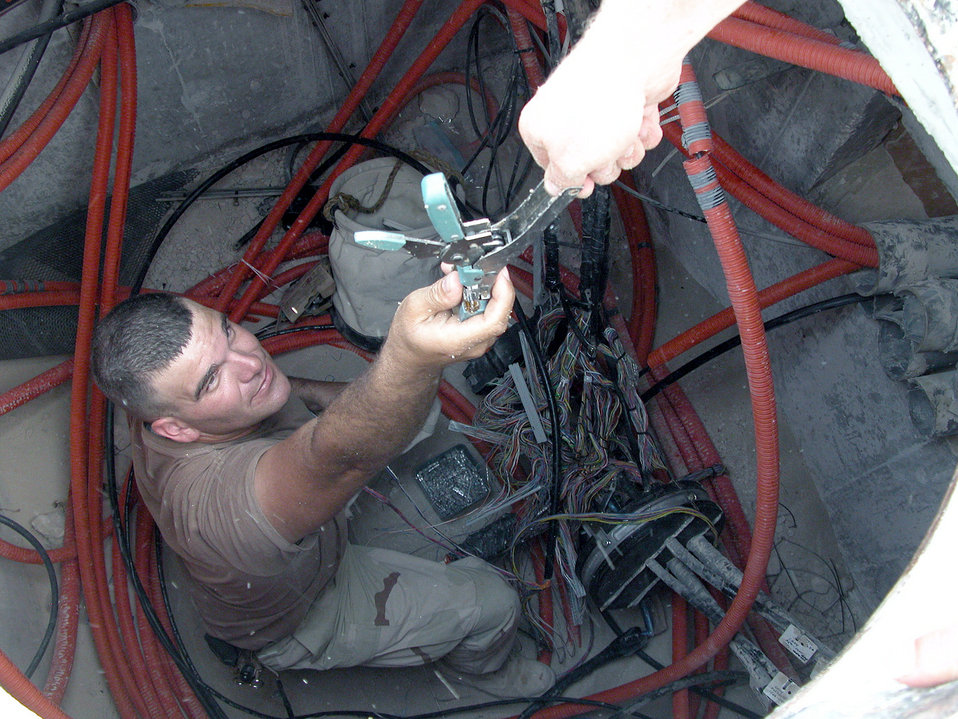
A helping hand

SOUTHWEST ASIA -- Senior Airman Jered Smither grabs a pair of wire crimpers to splice phone cables together at a forward-deployed location. Airman Smither is assigned to the 379th Expeditionary Communication Squadron and is deployed from Andersen Air Base, Guam.